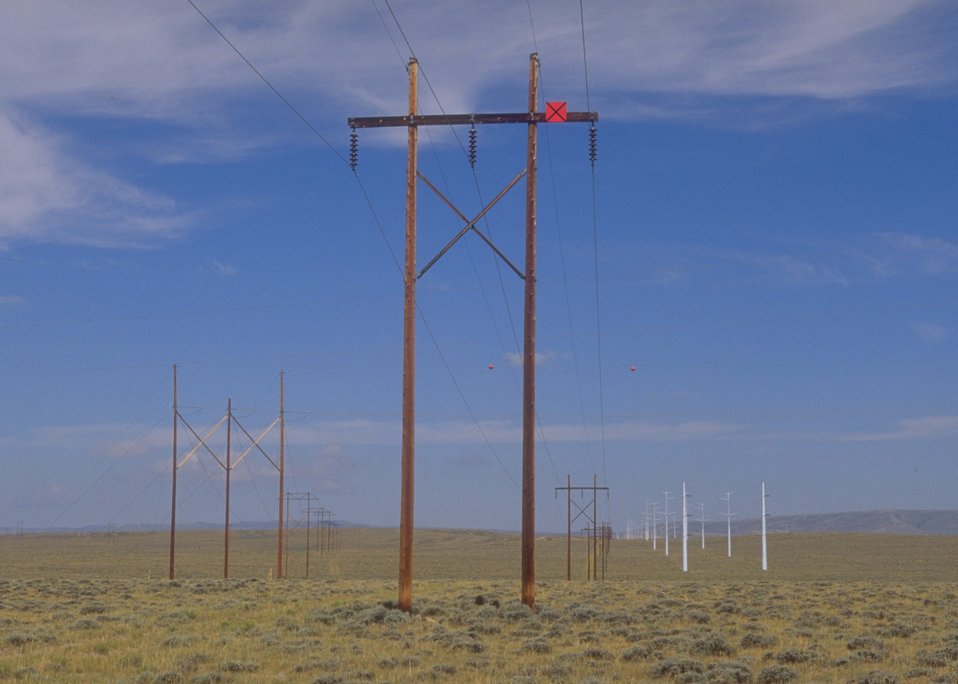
ROW's - Electric power lines along the Oregon Trail west of Casper, WY.